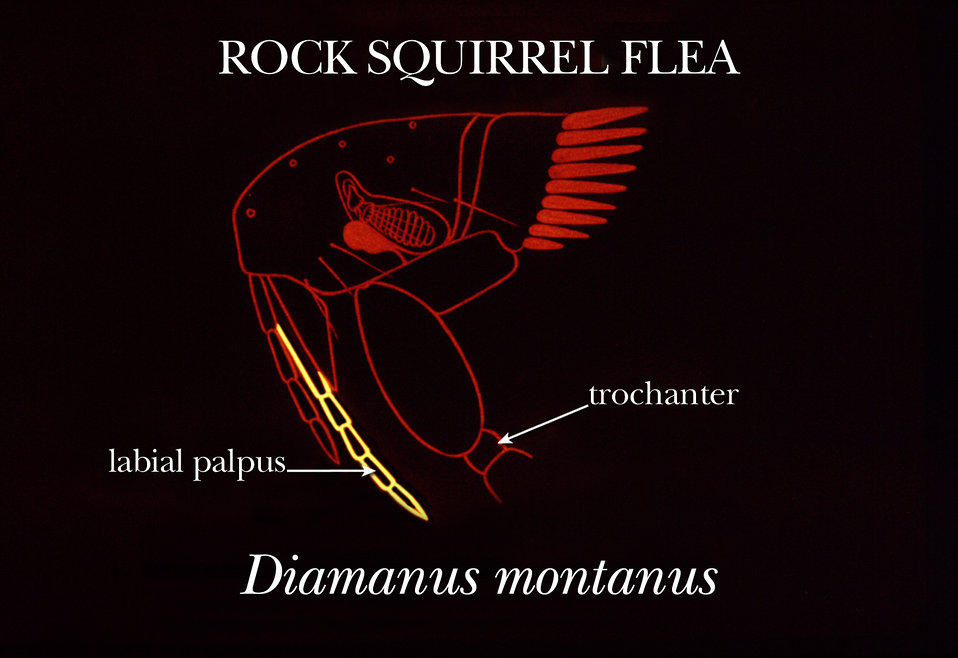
This illustration shows some of the identifying characteristics of the 'rock squirrel' flea, Diamanus montanus.